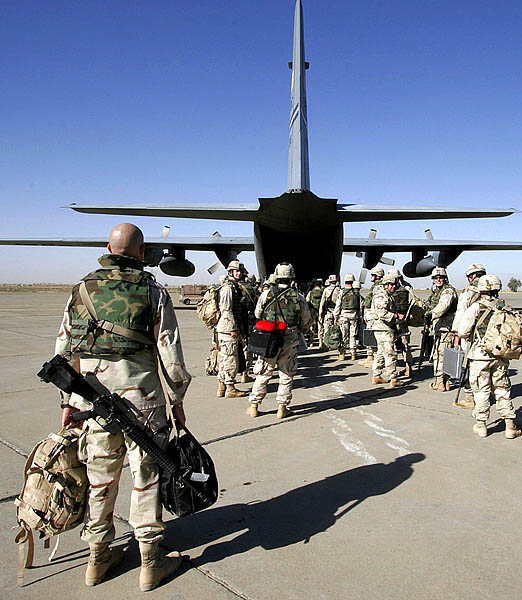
Airlift center

SOUTHWEST ASIA (AFPN) -- Troops